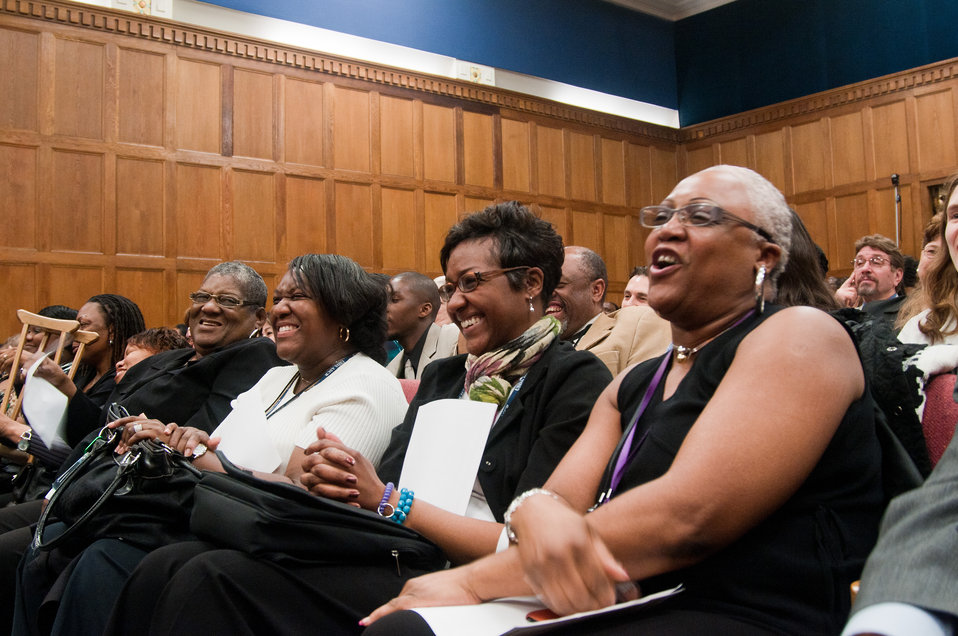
The audience laughed, listened and had an opportunity to meet Reverend Al Sharpton, Jr., keynote speaker at the Department of Agriculture’s African American History Month Program, on Monday, February 28, 2011; in Washington, D.C. Rev. Sharpton’s topic was “Civil Rights in the Age of Obama.”